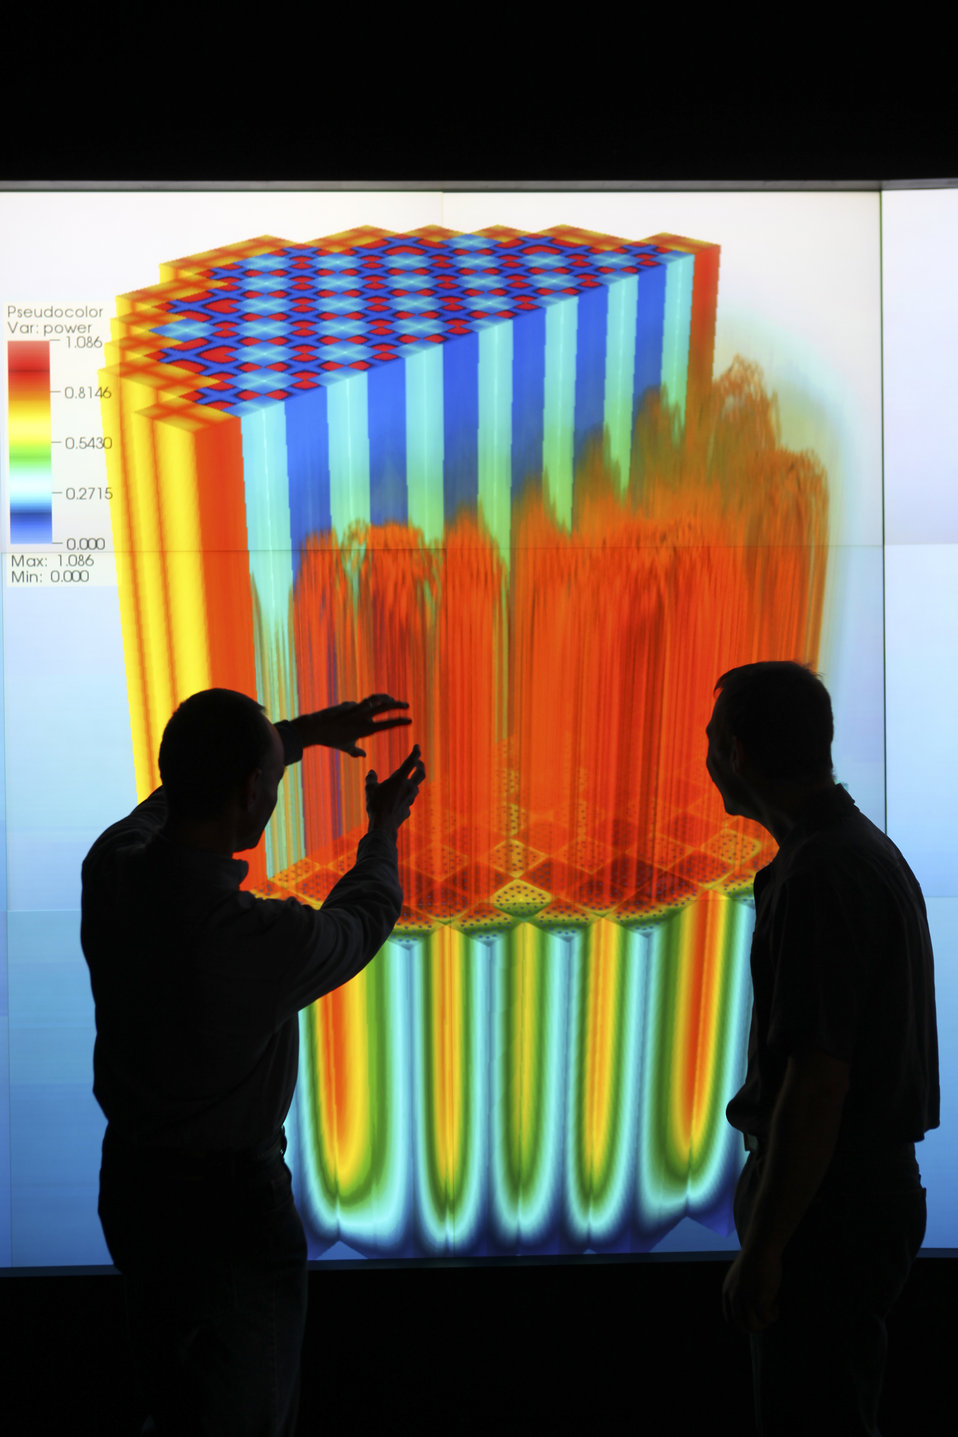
OAK RIDGE NATIONAL LABORATORY RESEARCHERS IN THE EVEREST VISUALIZATION FACILITY.

EVEREST (Exploratory Visualization Environmental for Research in Science and Technology) is a large scale venue for data exploration and analysis. Its main feature is a 27-projector PowerWall with an aggregate pixel count of 35 million pixels. The facility is part of the National Center for Computational Sciences.